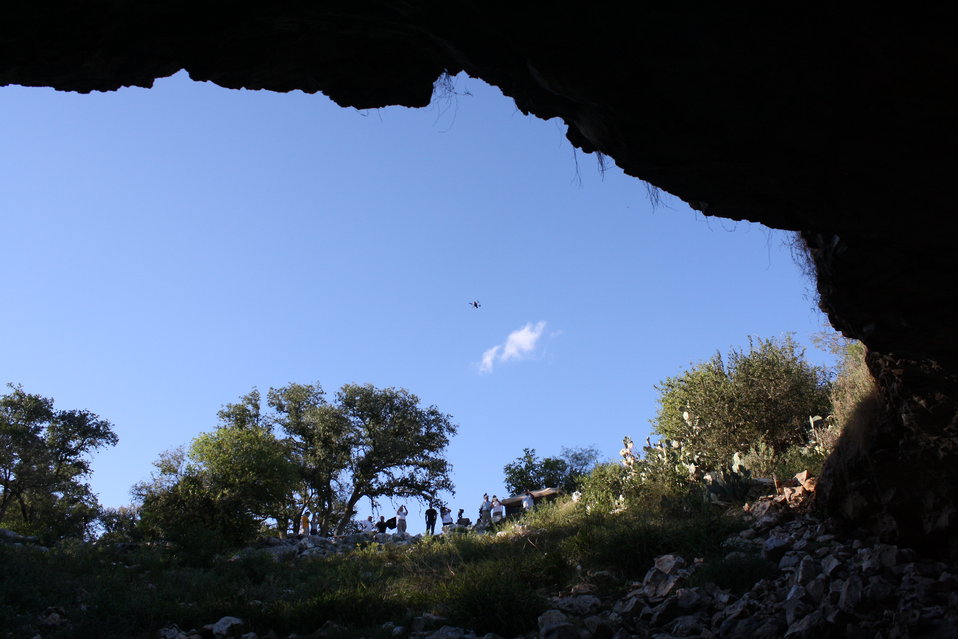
The 'drone' from inside the cave

A 'drone' was used to capture a daytime 'bats eye view' of the cave. Here is what the drone looks like from inside the cave.